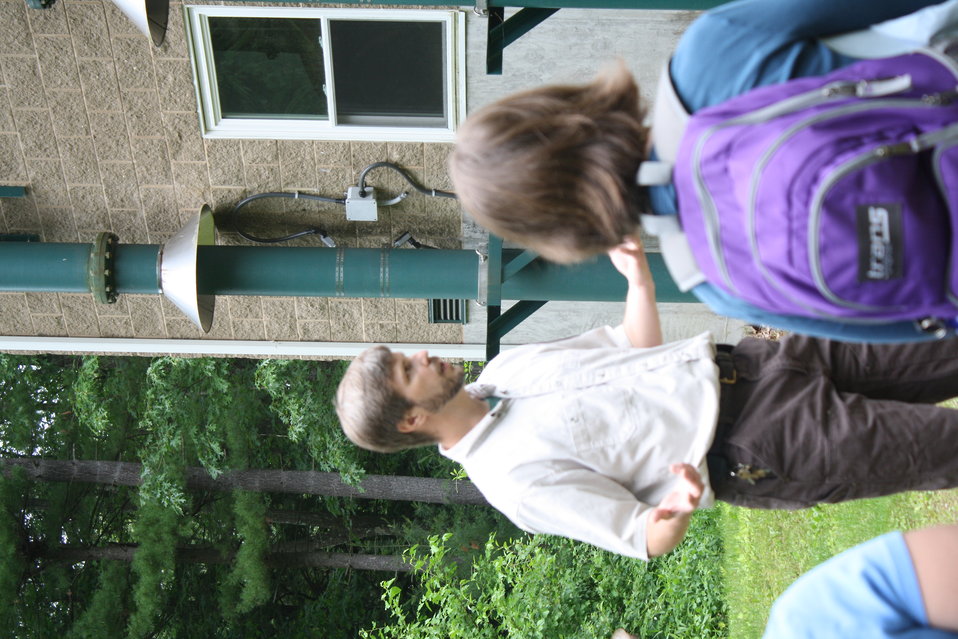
Nashua National Fish Hatchery welcomes regional office employees

Viewing the pump house water filtration system.